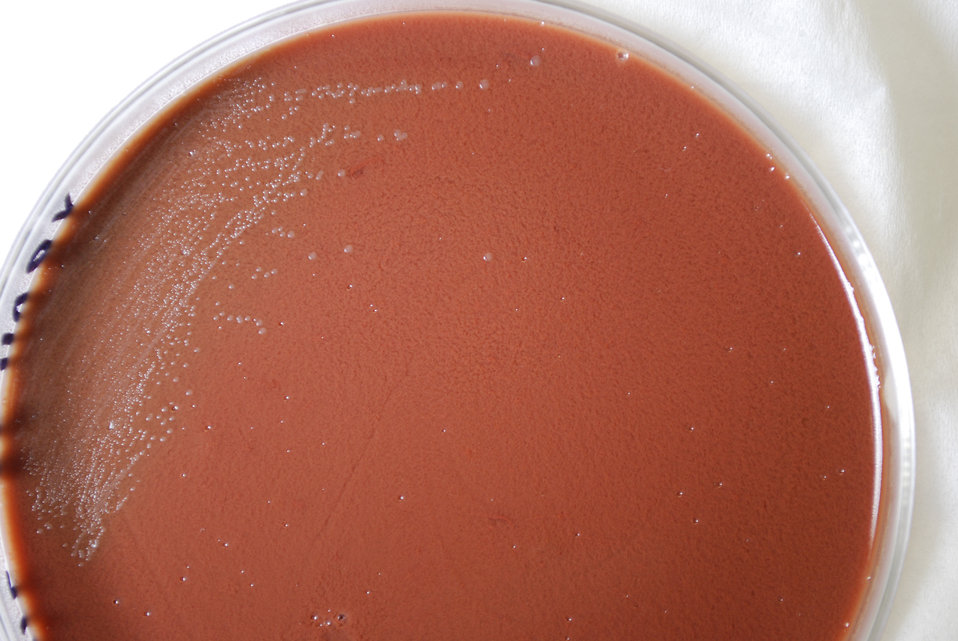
This closer view of PHIL 12227 depicts the colonial morphology displayed by Gram-negative Yersinia pestis bacteria, which was grown on a medium of chocolate agar, for a 48 hour time period, at a temperature of 37�C.